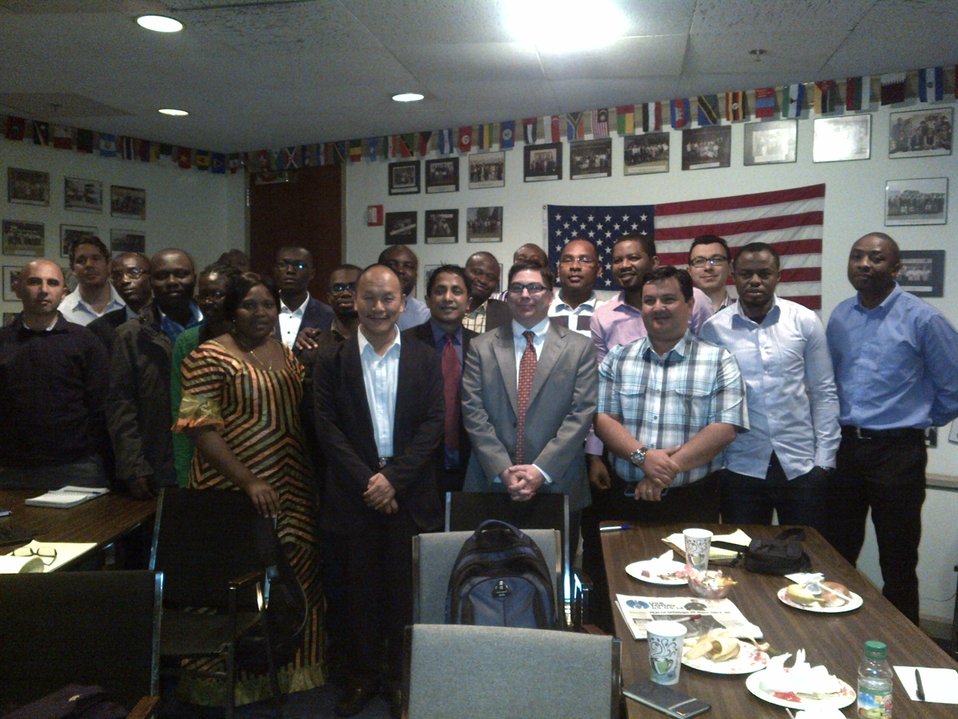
5.5.2014 Commissioner O'Rielly and USTTI scholars

Commissioner O'Rielly and USTTI scholars May 5, 2014.